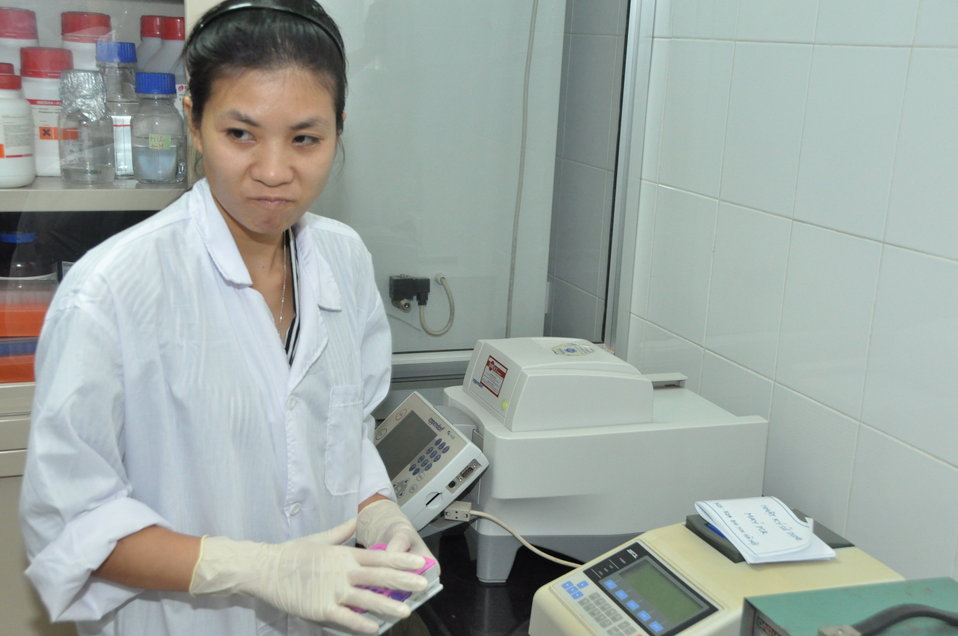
Animal virus detection lab training in Hanoi

Trainee learns how to detect viruses in Hanoi under a USAID program.